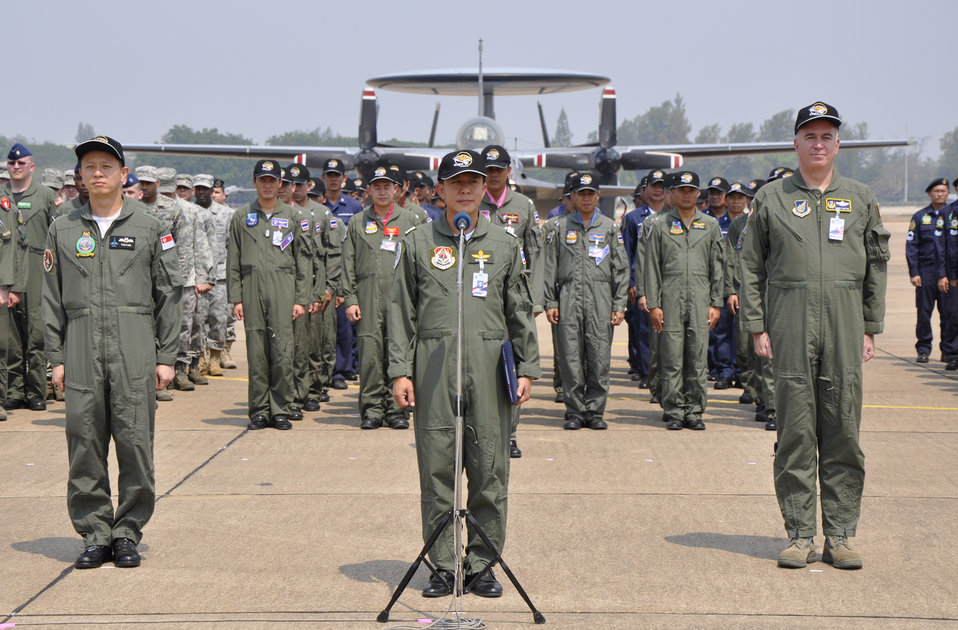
Pacific partners close Cope Tiger with ceremony

The Singaporean, Thai and U.S. exercise directors for Cope Tiger 2010 await the start of the exercise's closing ceremony March 12, 2010, at Korat Royal Thai Air Force Base, Thailand.